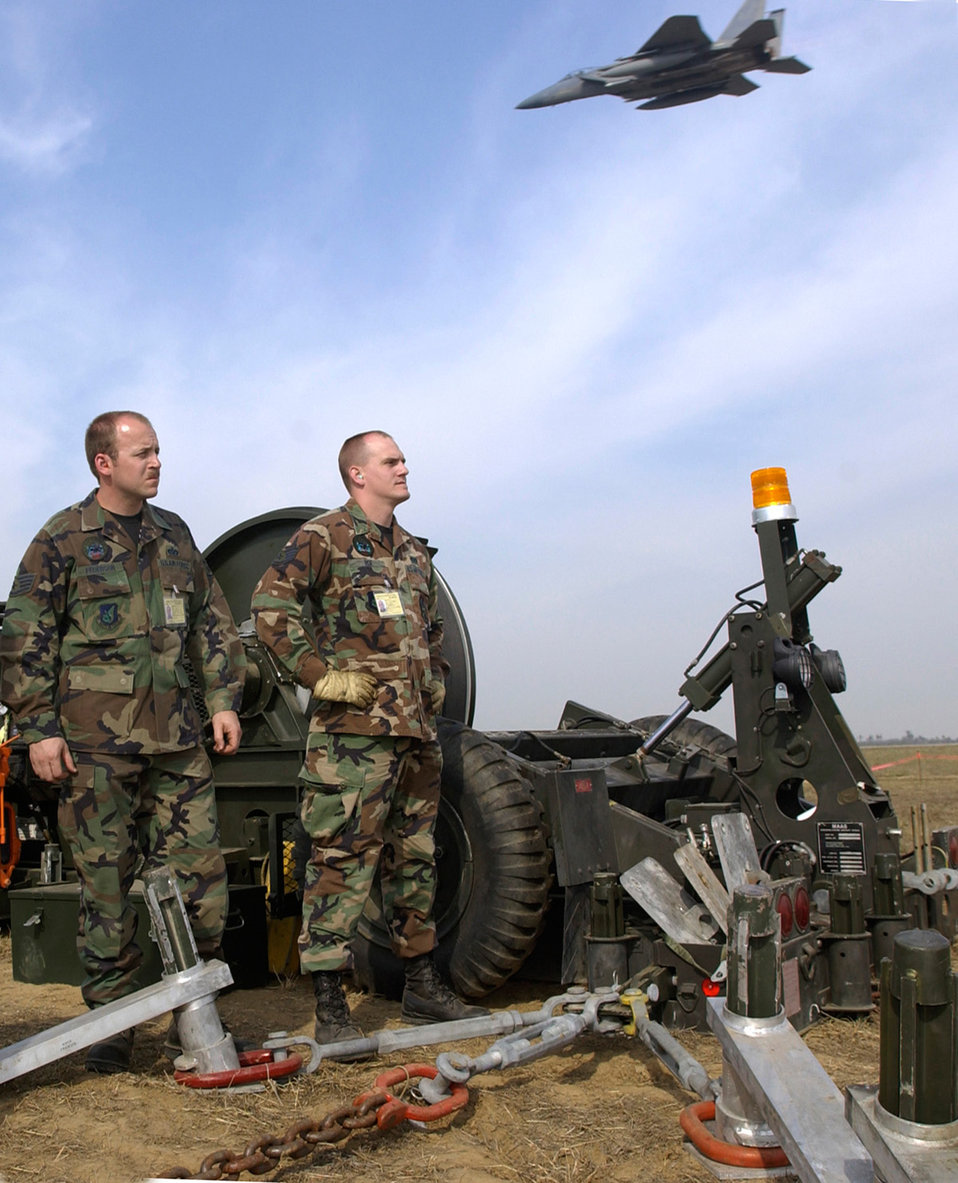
Setting the barrier

GWALIOR AIR FORCE STATION, India -- Staff Sgts. Todd Pederson and Robert Roe wait near the flightline as an F-15 Eagle flies overhead. Both sergeants are Mobile Aircraft Arresting System technicians taking part in Cope India 04 here. The MAAS is designed to ensure U.S. pilots land safely in the event of an in-flight emergency.